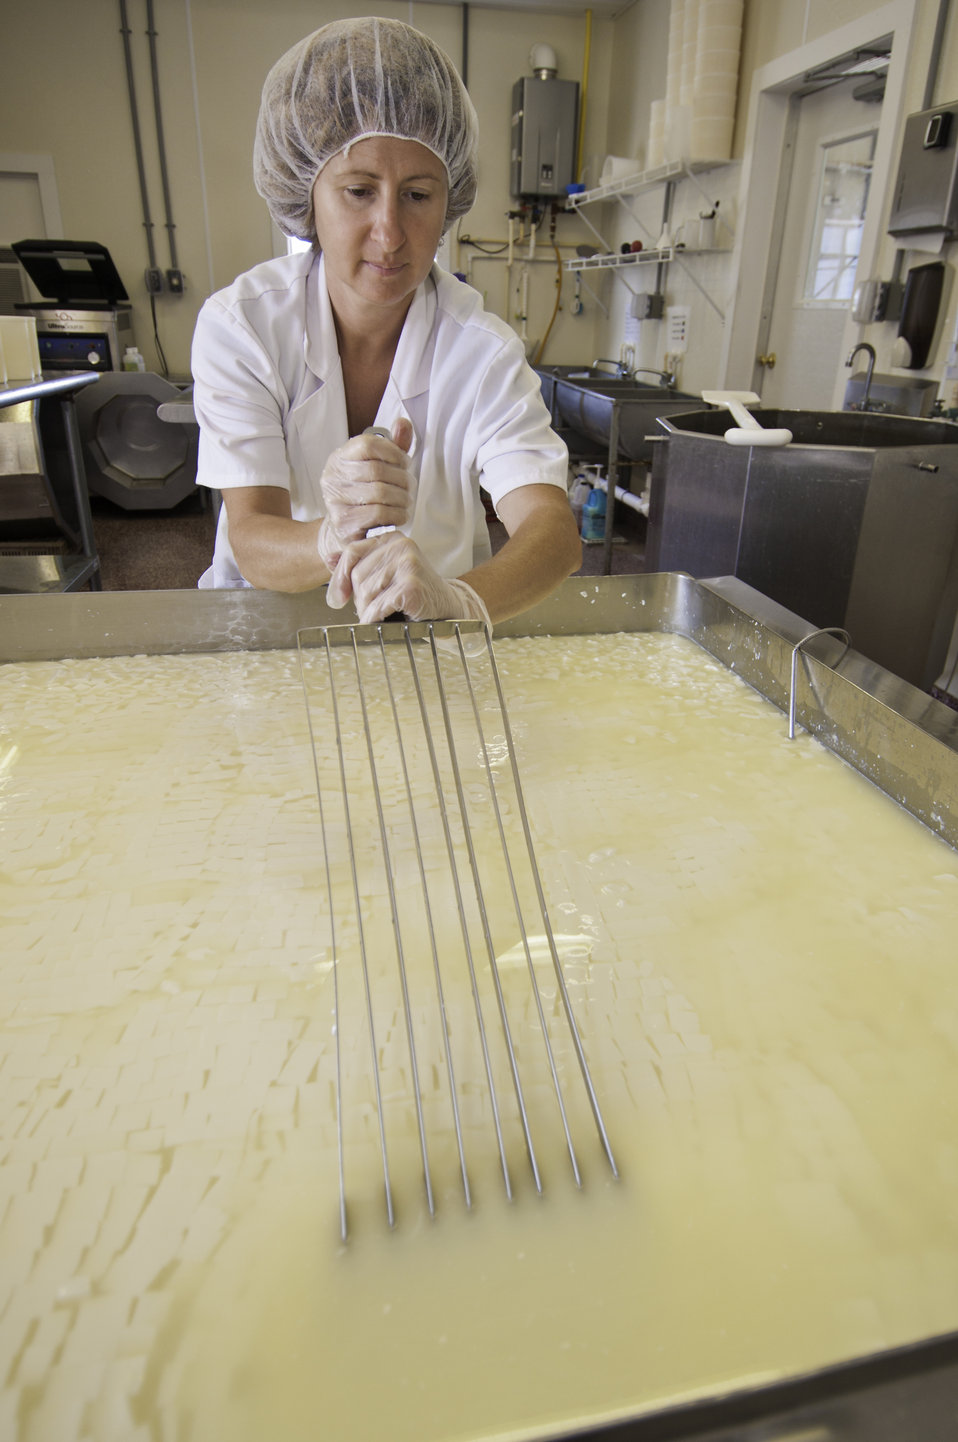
Chapel’s Country Creamery owner Holly Foster in Easton, MD cuts the milk curd with a curd knife in small cubes. Timing is everything in this step. Then the curds are cooked and stirred in the whey that was expelled in the cutting process. The dairy uses fresh raw milk 12-24 hours old. The milk is all-natural and contains no synthetic hormones, antibiotics, or chemical compounds. The 1150 pounds of milk in the vat will be used to make the dairy’s “Bay Blue” Cheese.